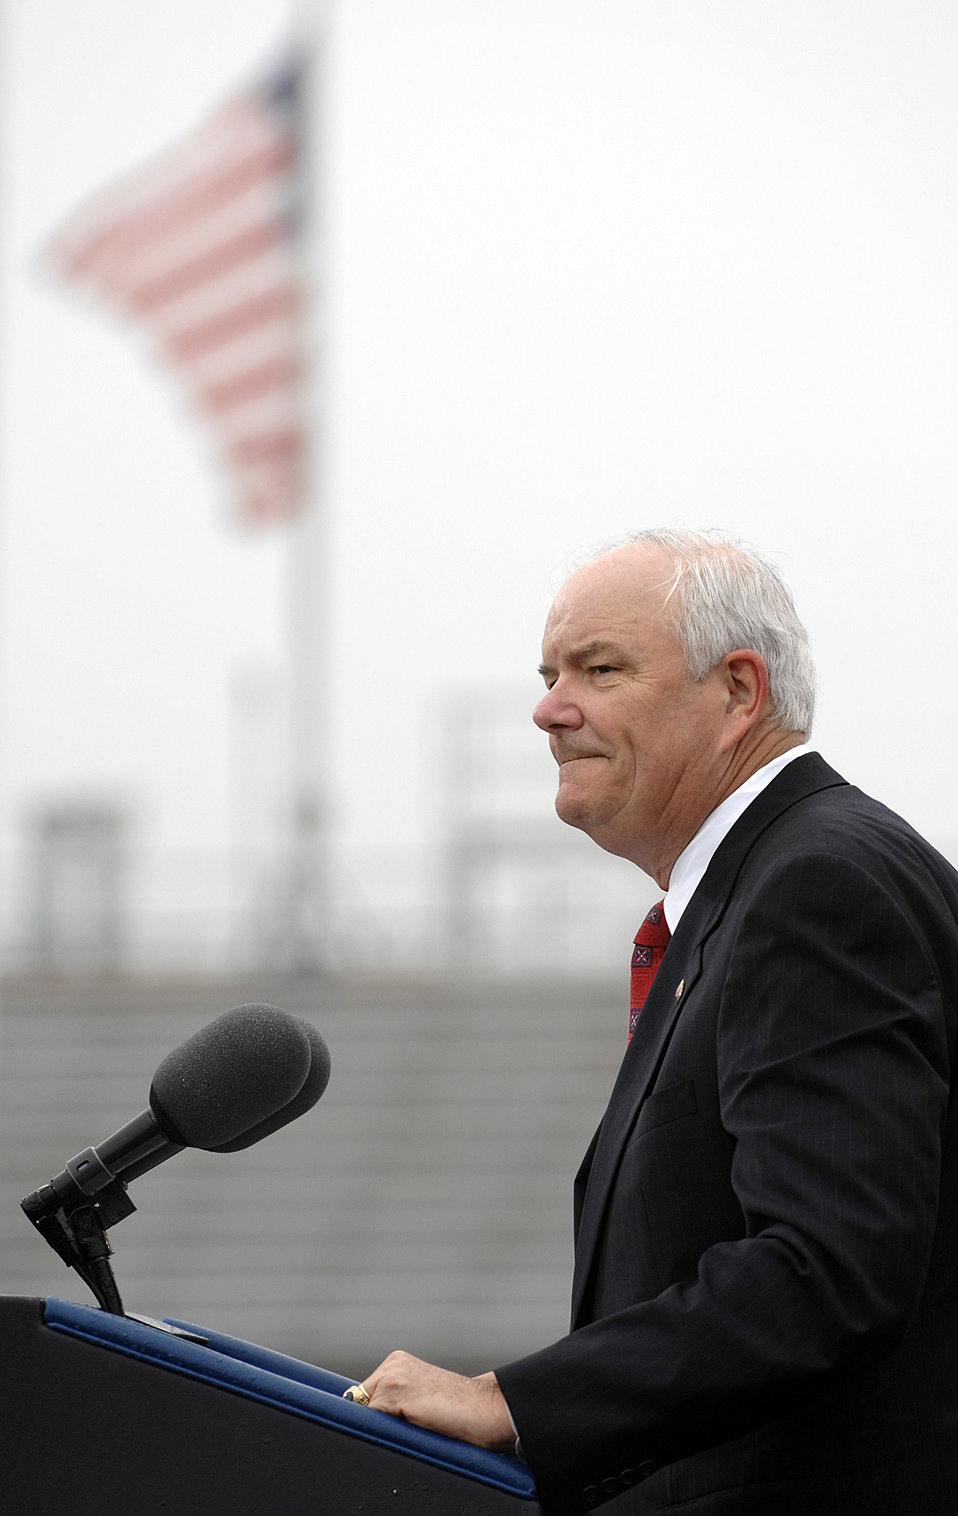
The 50th Academy class graduates

Secretary of the Air Force Michael W. Wynne addresses the U.S. Air Force Academy Class of 2008 during the graduation ceremony at Falcon Stadium May 28.